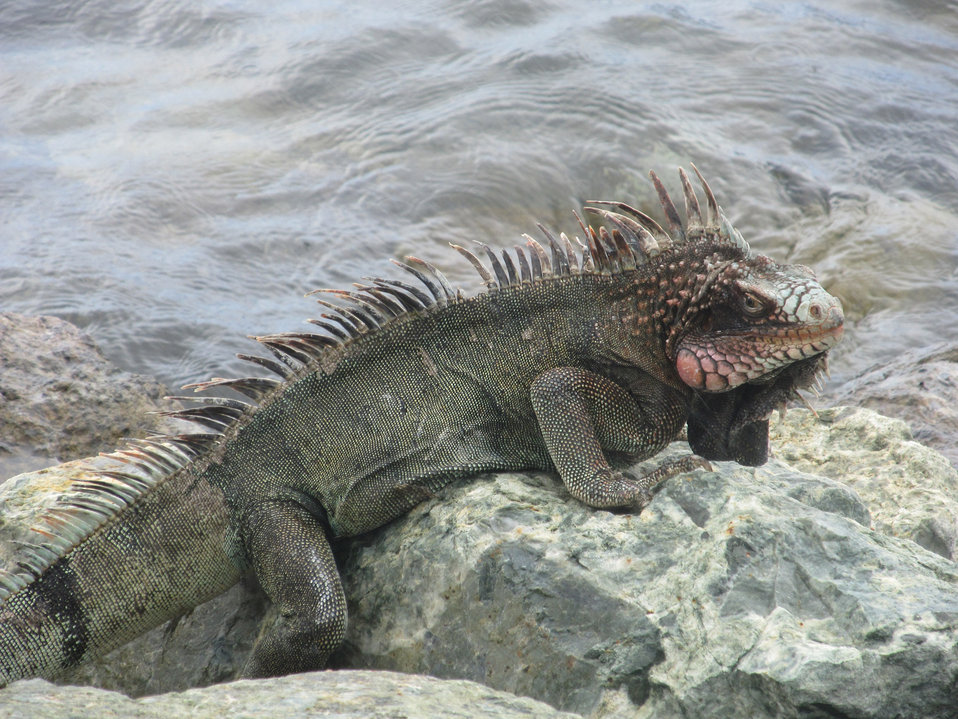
Smiling iguana

A marine iguana smiles at us while sunning himself.